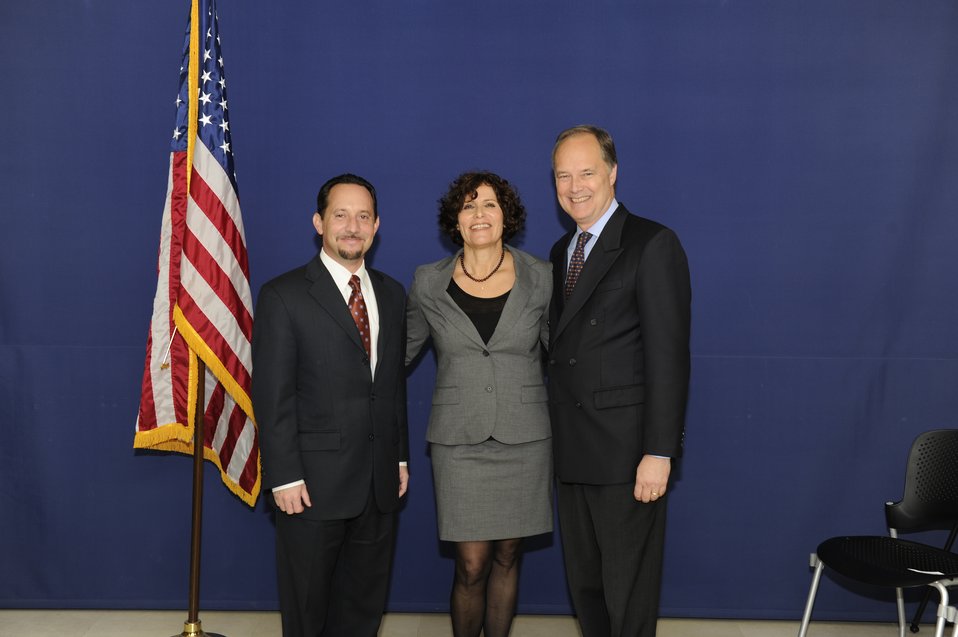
Ambassador Cunningham, Consul General Rubinstein, and CISCO Senior Manager Abzuk Celebrate the ACE Award in Jerusalem

U.S. Ambassador to Israel James Cunningham, right, U.S. Consul General to Israel Daniel Rubinstein, left, and Cisco Senior Manager Zika Abzuk, center, linked via digital video conference with the Secretary of State's Award for Corporate Excellent (ACE) event in Washington, D.C., celebrate the Award at a Jerusalem event in Israel, December 17, 2010.